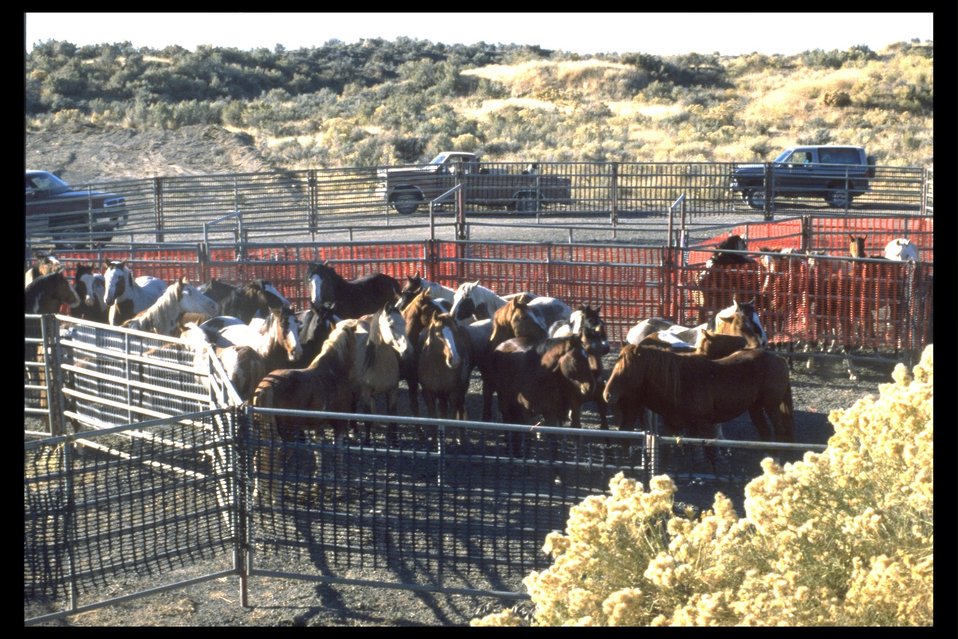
South Steens wild horses at a trap in the Burns District.